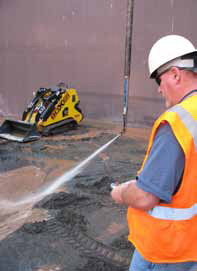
Vertical Reach Sluicer (VRS) Testing

Project Engineer Dave Smet uses a remote control to operate the new Vertical Reach Sluicer (VRS) that was recently tested at the Cold Test Facility north of Richland. The VRS is designed to help remove waste from tanks in AX Farm which have air lift circulators inside. The circulators would be an obstruction to conventional sluicers but the new VRS can operate below the circulators and move waste to a central pump so it can be removed.

The new sluicers, produced by HiLine Engineering and Fabrication Services of Richland, are designed to be deployed into an AX tank. Retrieval operations in the first AX tank to be retrieved are scheduled to begin in fiscal year 2016.